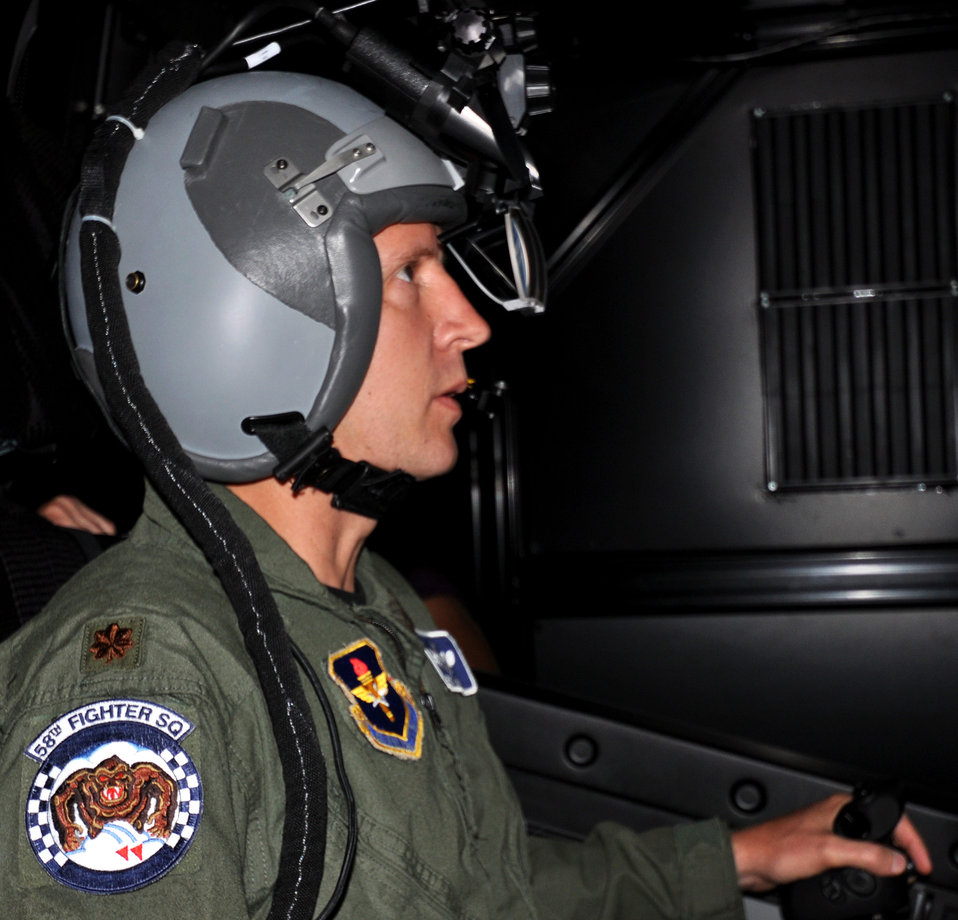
New F-35 classroom

Maj. Eric Smith flies the 33rd Fighter Wing mission rehearsal trainer for the F-35 Lightning II during a demonstration May 27, 2010, at Eglin Air Force Base, Fla. The trainer will use state of the art technology to further familiarize students with the F-35. Major Smith is the 58th Fighter Squadron assistant operations director.